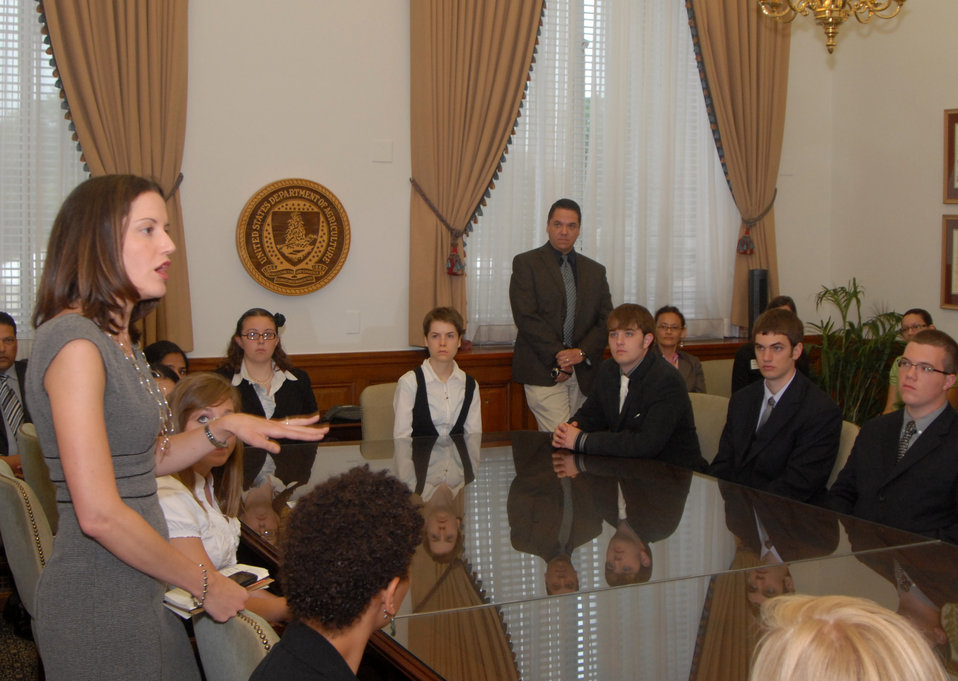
Lona Stoll, Senior Advisor to Agriculture Secretary Tom Vilsack speaks with Wallace-Carver interns at the U.S. Department of Agriculture in Washington, DC, on Monday, June 20, 2011.